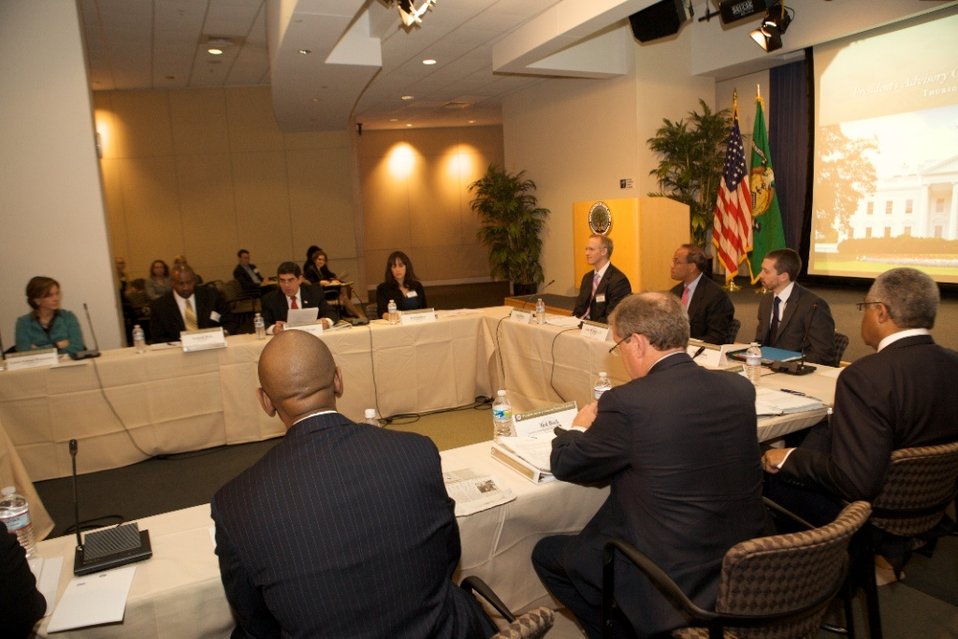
Education, Treasury Recognize High-Scoring Students in the 2010-11 National Financial Capability Challenge

The ceremony took place at a public meeting of the President’s Advisory Council on Financial Capability at the U.S. Department of Education. President Obama created the President’s Advisory Council on Financial Capability to promote and enhance financial literacy and capability among the American people. The Council is tasked with a number of important charges, including advising the President on financial education efforts; promoting financial products and services that are beneficial to consumers, especially low- and moderate-income consumers; and promoting understanding of the effective use of such products and services.